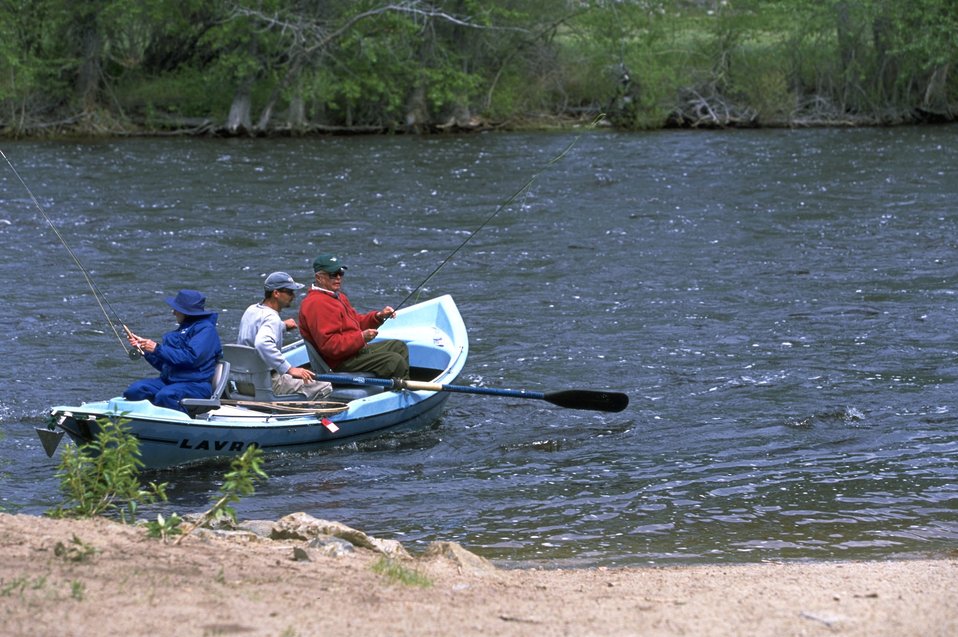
Fishing boat at the Divide Day Use Area